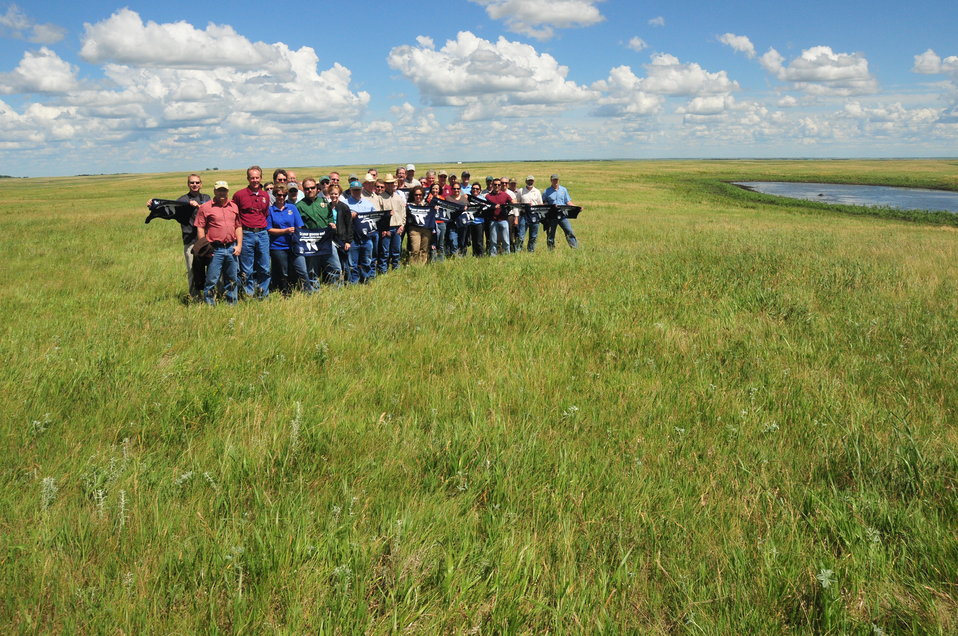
Get Your Goose On!

The national meeting for regional chiefs of the National Wildlife Refuge System is held three times a year in different locations around the country. This 2012 meeting took place in McPherson County, South Dakota, and focused on the Dakota Grassland Conservation Area.

This photo was taken on the Wade Weiszharr and Family Ranch, which contains perpetual U.S. Fish and Widlife grassland and wetland easements. This site is also located in the heart of Prairie Pothole Region, making it extremely productive migratory bird habitat and a great place to “Get your goose on!”

Here is a group shot taken on Wade Weisszhauer Ranch!